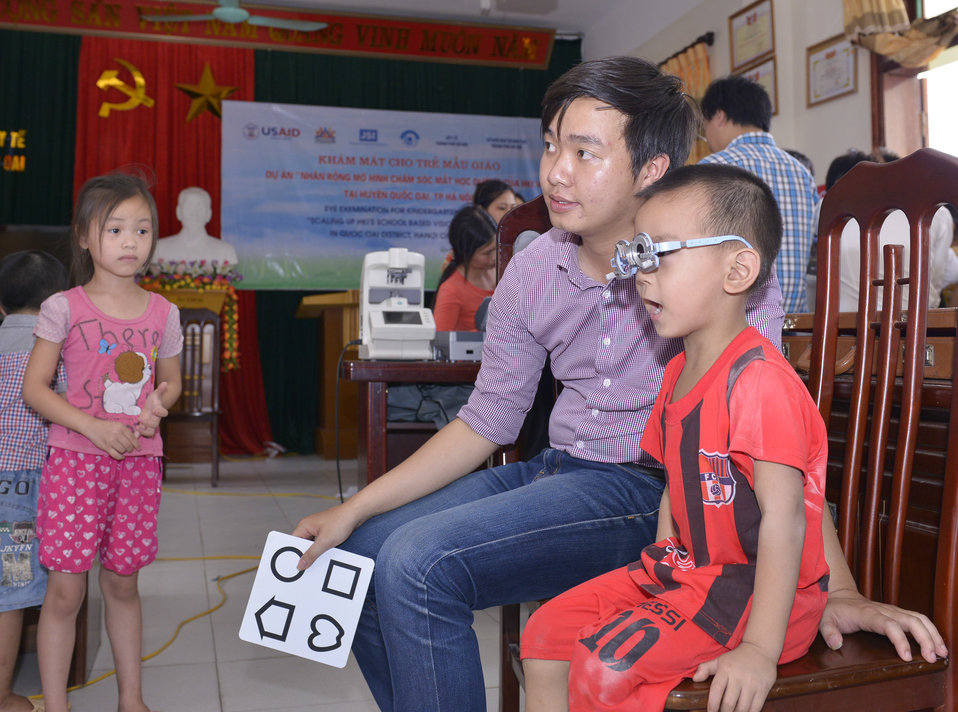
Eye screening for kindergarten children in Quoc Oai district of Hanoi

Quoc Oai, Hanoi. May 31, 2014.